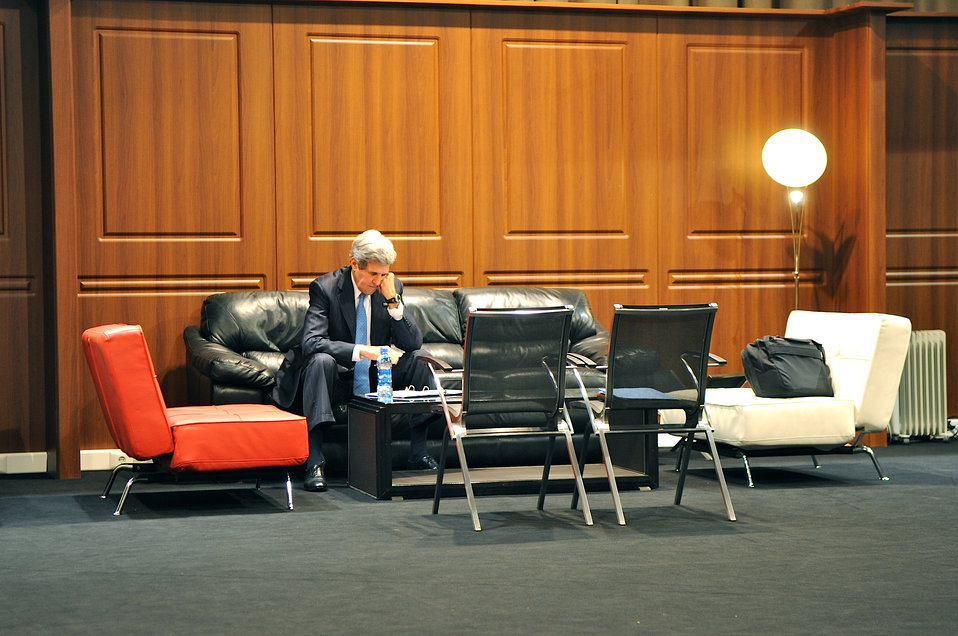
Secretary Kerry Prepares for His Speech at the African Union Summit

U.S. Secretary of State John Kerry works on the speech he delivered for the 50th anniversary African Union Summit in Addis Ababa, Ethiopia, on May 25, 2013.